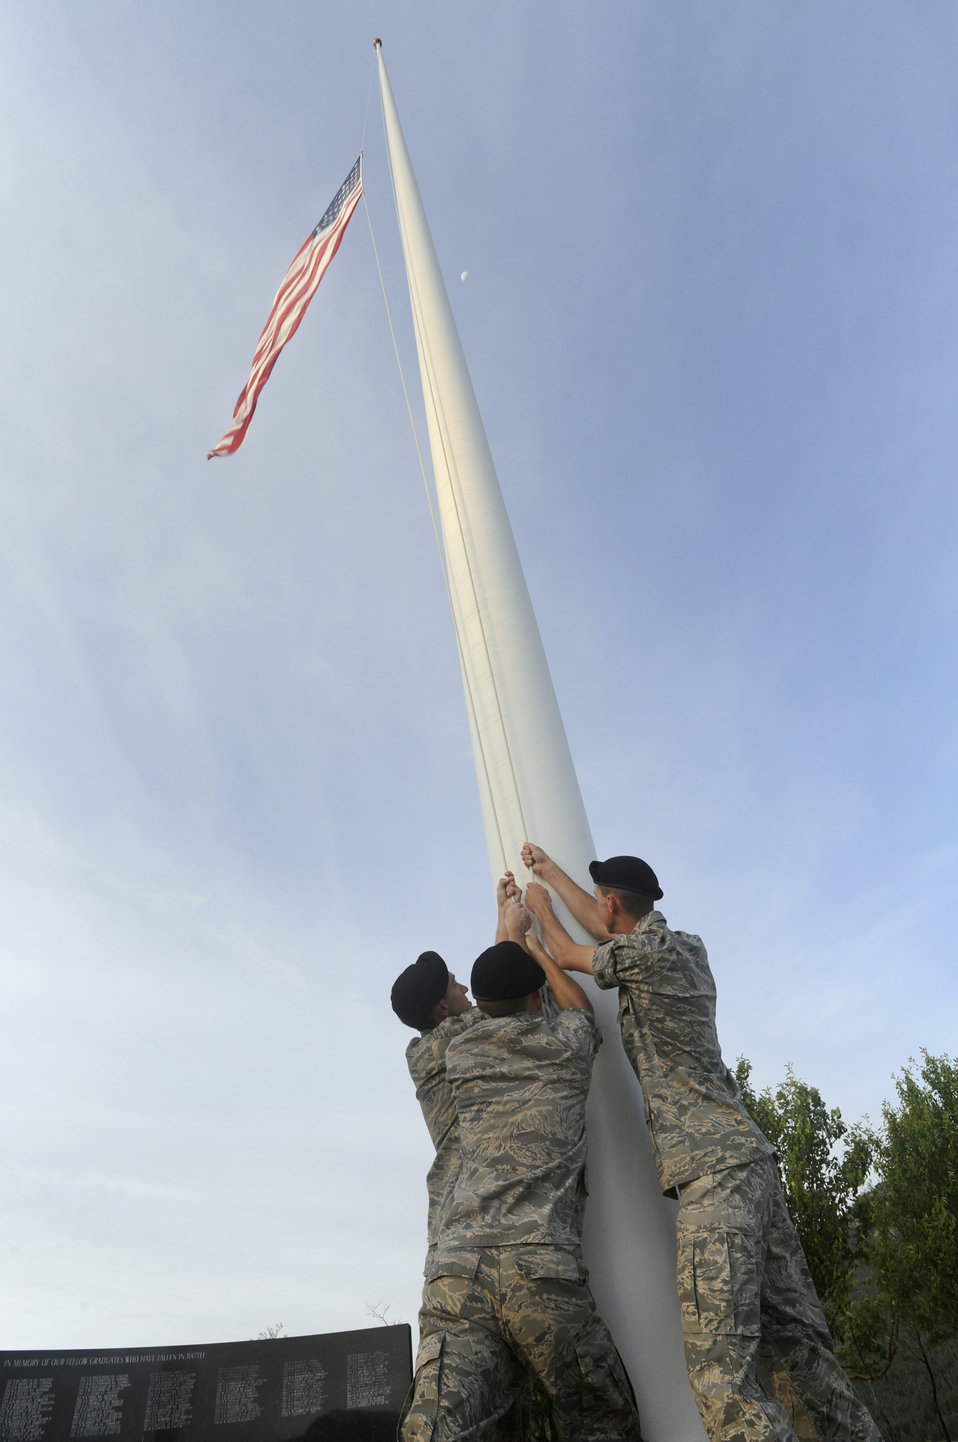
Reveille Ceremony

The cadet flag detail raises the American flag during a reveille formation in honor of Patriot's Day and the Fallen Heroes of 9/11 on Sept. 11, 2009, at U.S. Air Force Academy, Colo.